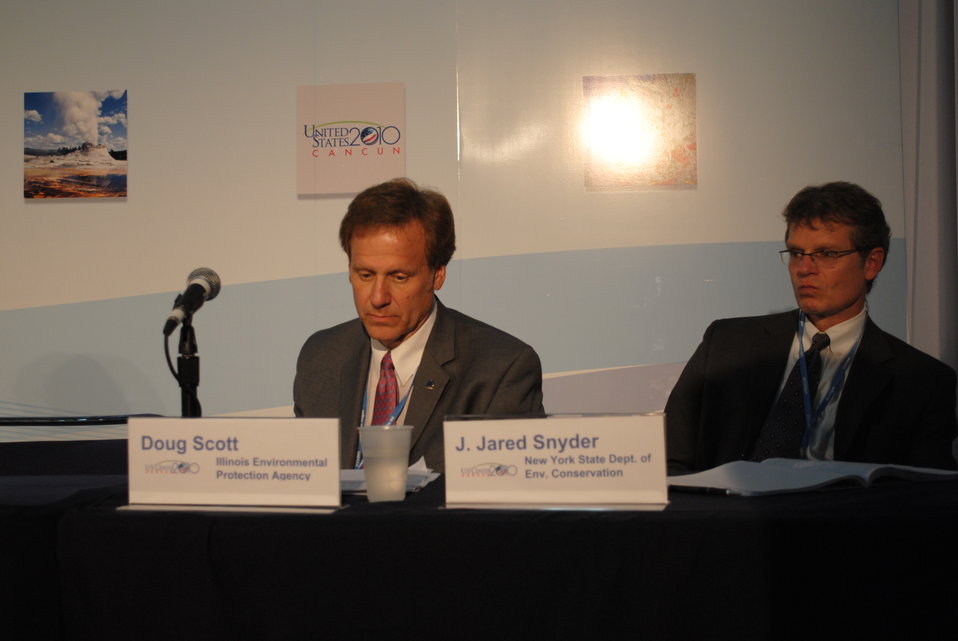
Doug Scott and J. Jared Snyder Respond to Questions from the Audience

Doug Scott of the Illinois Environmental Protection Agency and J. Jared Snyder of the New York State Department of Environmental Conservation respond to questions from the audience at the U.S. Center at COP-16 in Cancun, Mexico, on December 6, 2010.